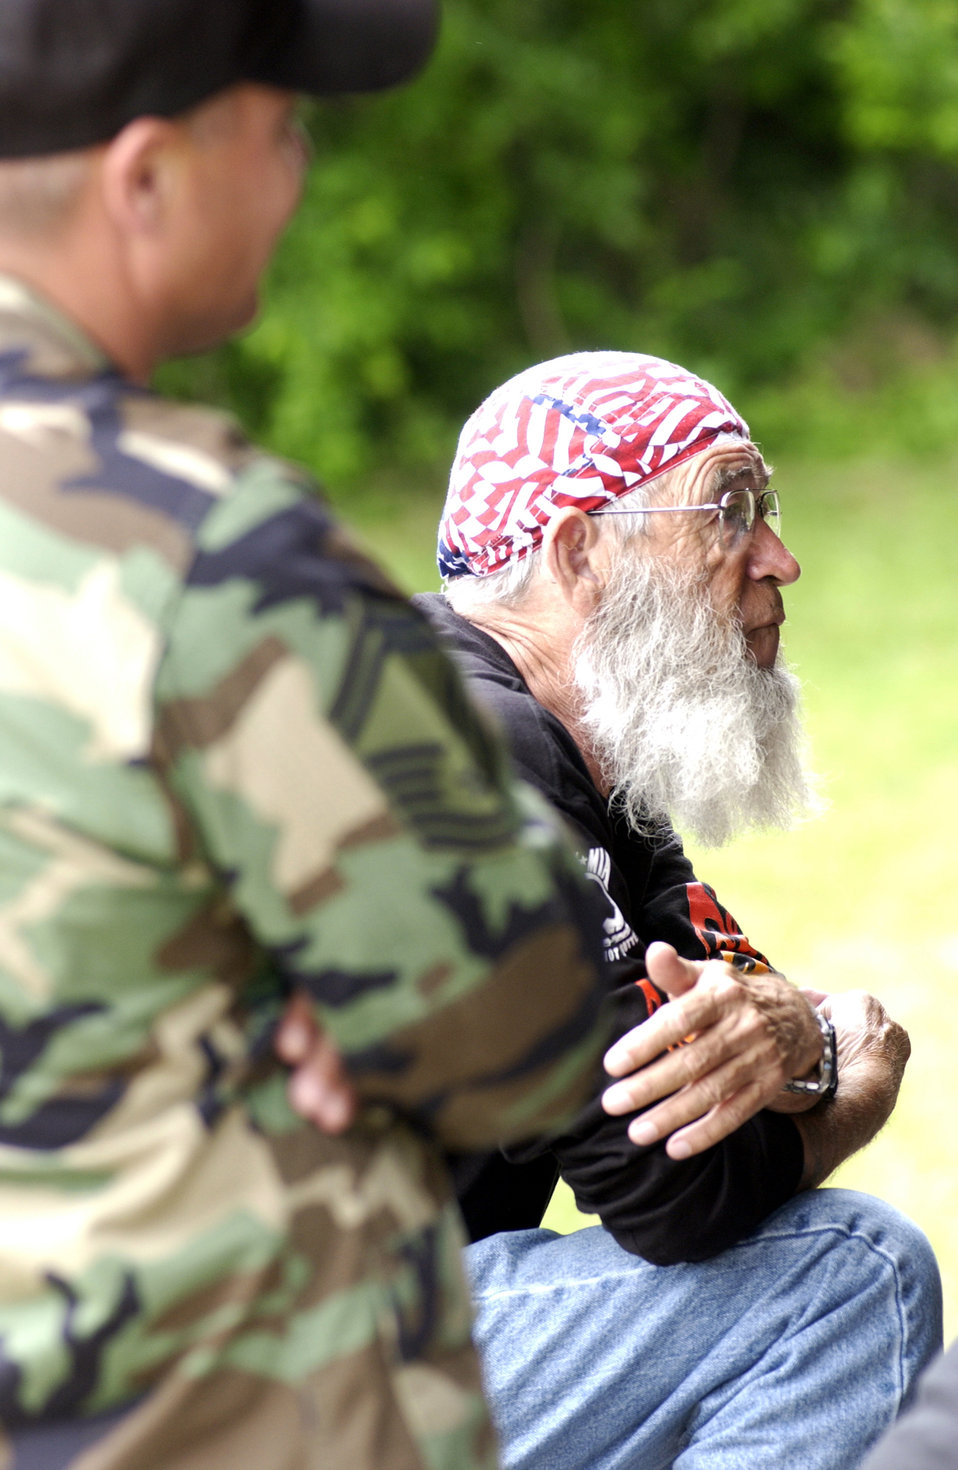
Motorcycle safety forum held at Andrews

ANDREWS AIR FORCE BASE, Md. -- Willie Black listens during the question and answer period of a motorcycle safety forum here May 28. He is a 68-year-old retired Air Force technical sergeant who has been riding motorcycles for 53 years.